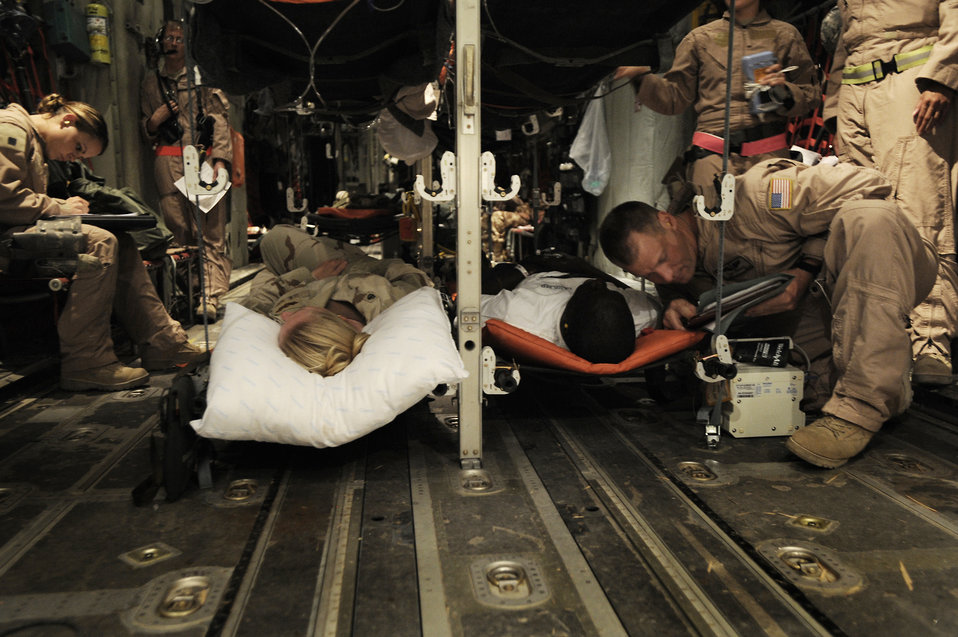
Flying hospital staff gives wounded fighting chance

Master Sgt. Zachary Johnson cares for a patient during an aeromedical evacuation mission to transport patients July 19 from Kandahar Airfield, Afghanistan, to Bagram Airfield, Afghanistan. Sergeant Johnson is a 451st Expeditionary Aeromedical Evacuation Flight aeromedical technician.